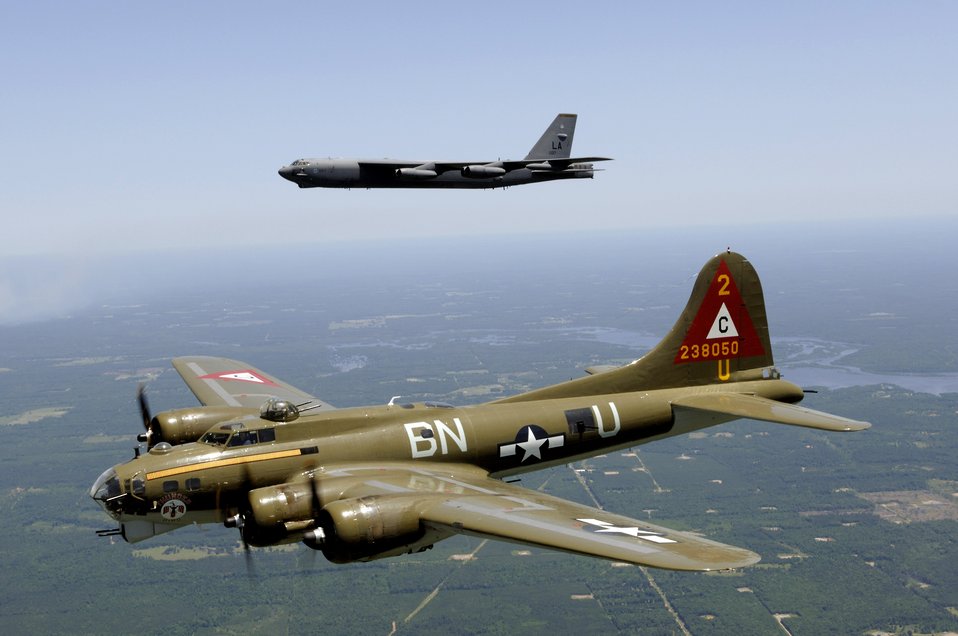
Heritage flight

A B-17G Flying Fortress nicknamed